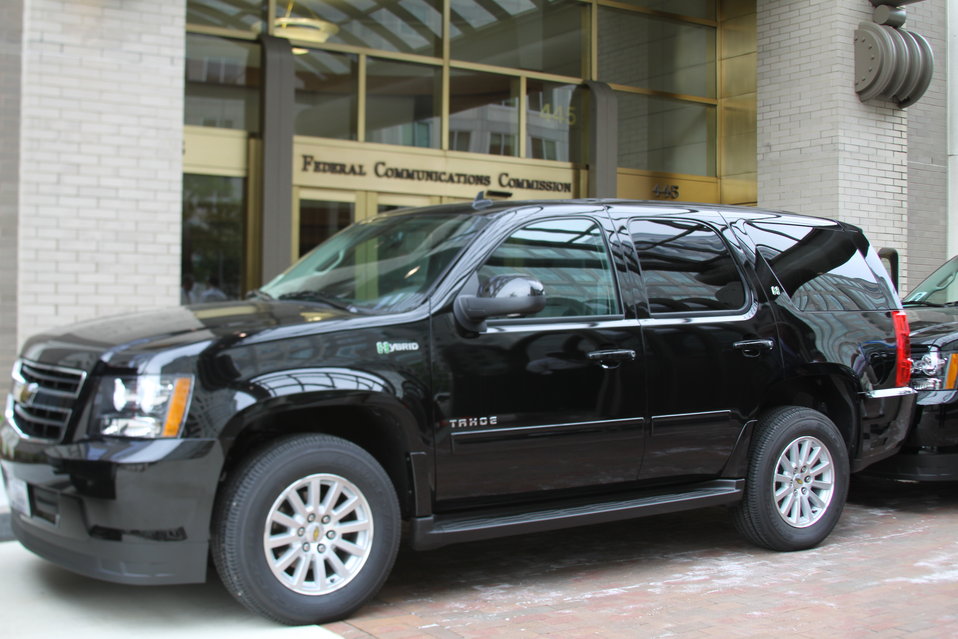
Tahoes 010